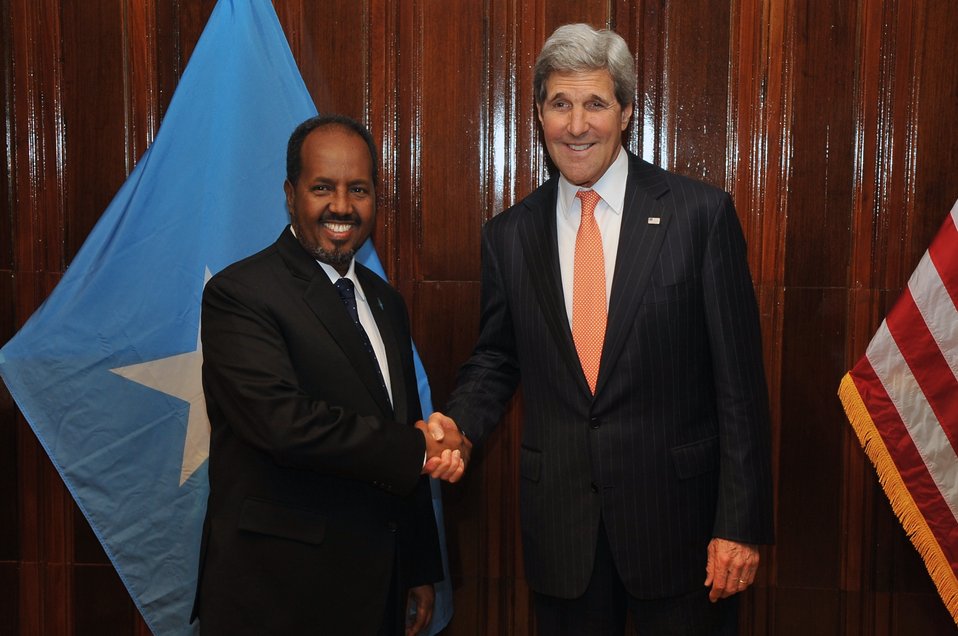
Secretary Kerry Meets With Somali President Mohamud

U.S. Secretary of State John Kerry and Somali President Hassan Sheikh Mohamud pose for photographers before the two held a bilateral meeting in Addis Ababa, Ethiopia, on May 3, 2014.